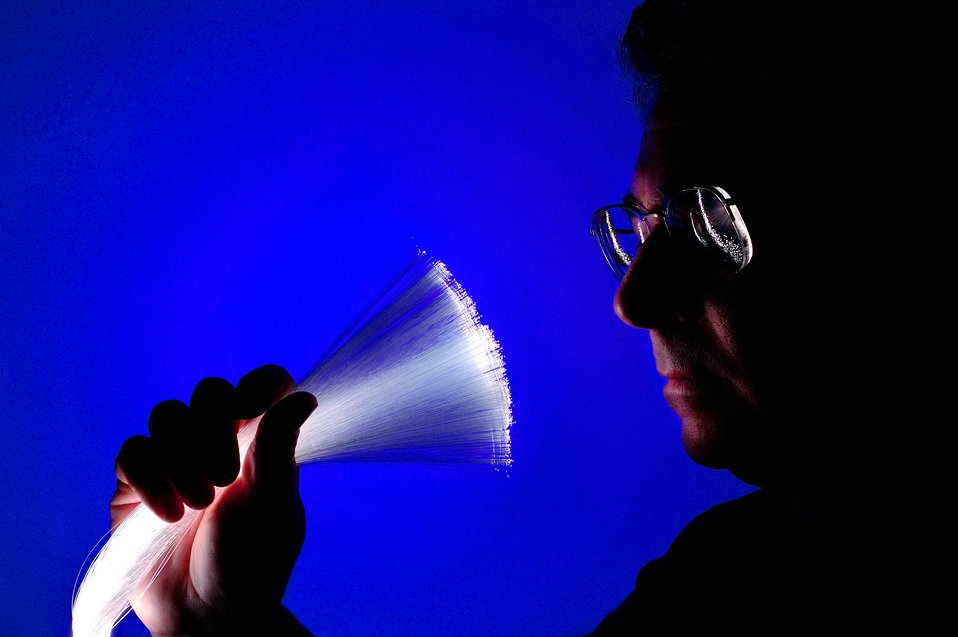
SANDIA NATIONAL LABORATORY RESEARCHER USES LIGHT FIBERS IN WAYS TO TEST CAR BATTERIES, DETERMINE LANDFILL LEAKAGE, AND HELP OIL COMPANIES SEPARATE OIL FROM WATER.